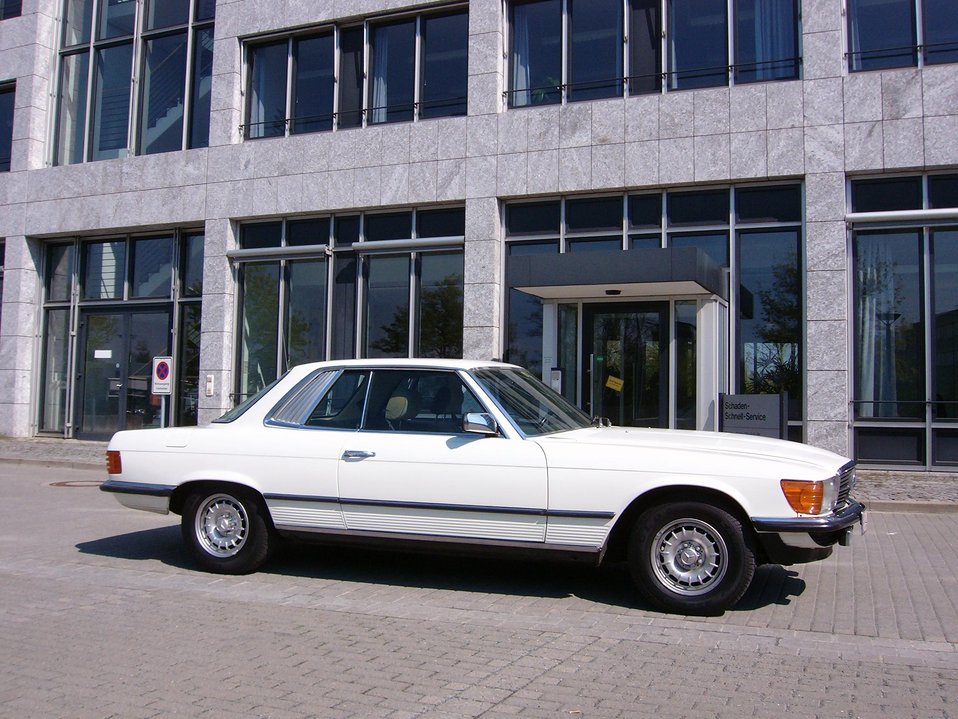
Deutsch: Mercedes C107 450 SLC 5.0 1979